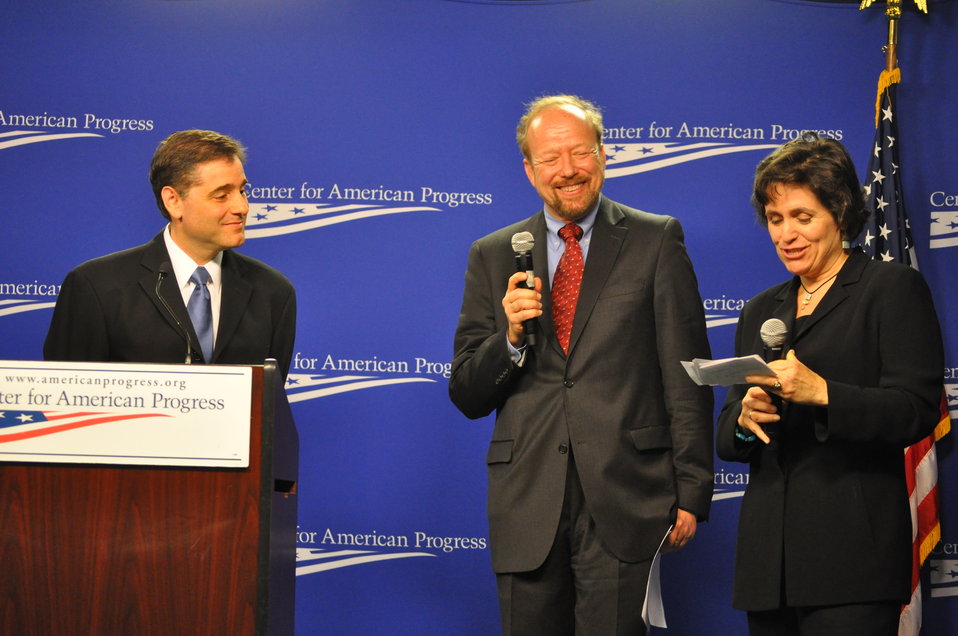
'Cramming' and Mystery Fees Event

Julius Genachowski, Chairman of Federal Communications Commission, Joel Gurin, Chief, Consumer and Governmental Affairs Bureau of Federal Communications Commission, and Sarah Rosen Wartell, Executive Vice President, Center for American Progress